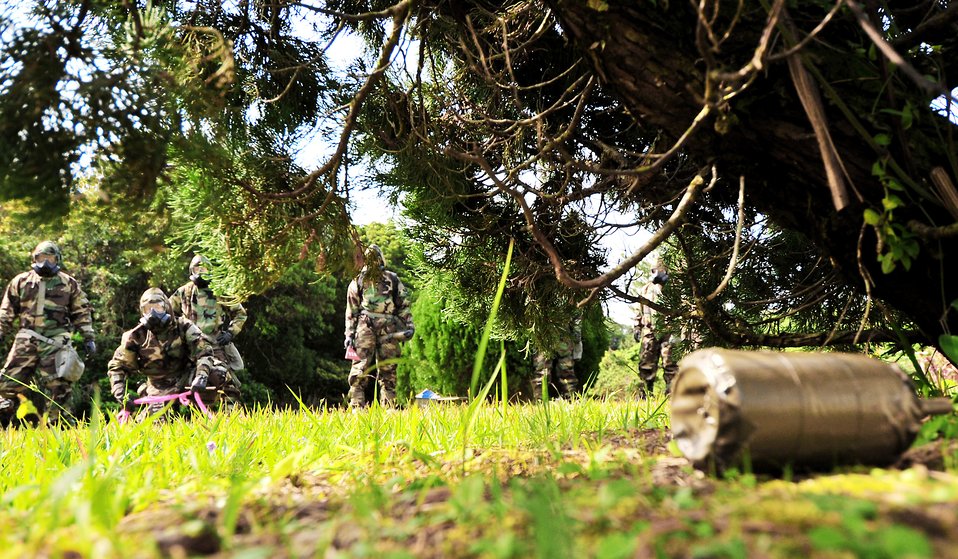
Kadena Airmen train to 'survive'

A group of Airmen from the 18th Munitions Squadron locate an unidentified explosive ordnance during an